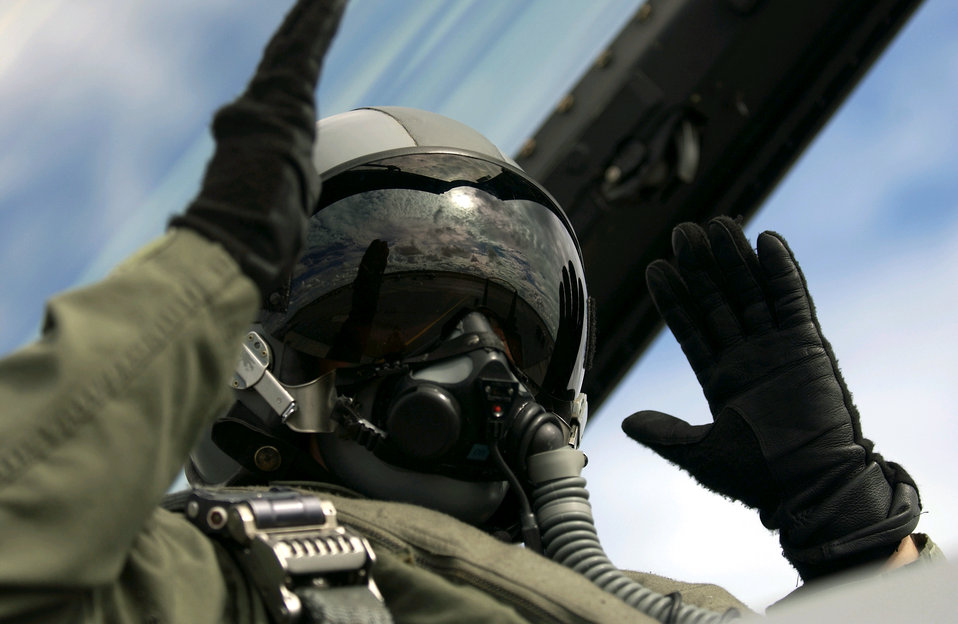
Visor down

EIELSON AIR FORCE BASE, Alaska -- Lt. Col. Greg Dodson prepares to take off for a training mission here July 28 during Cooperative Cope Thunder. Colonel Dodson is the commander of the 18th Fighter Squadron.